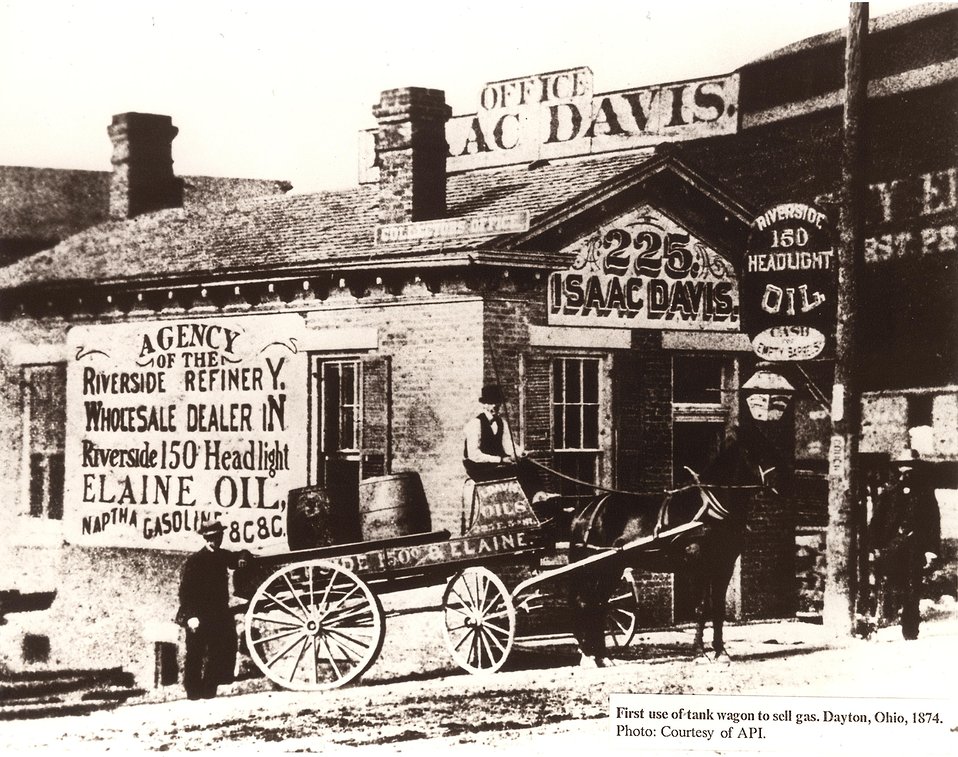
First use of tank wagon to sell gas. Dayton, OH 1874.